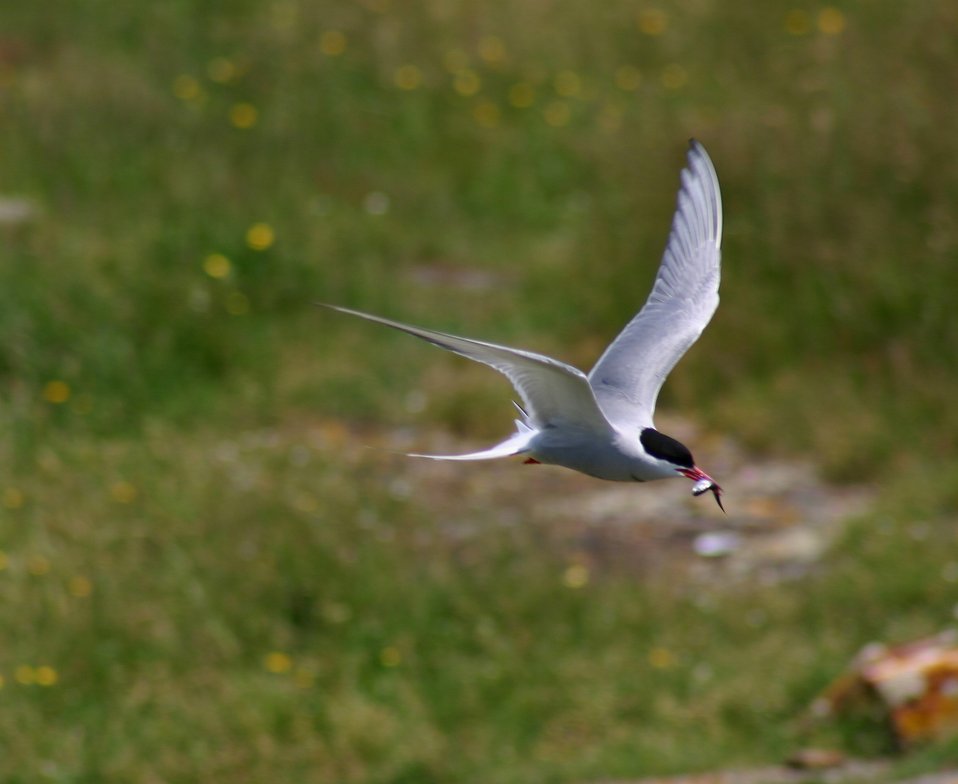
Common tern flying with fish in mouth at Maine Coastal Island National Wildlife Refuge